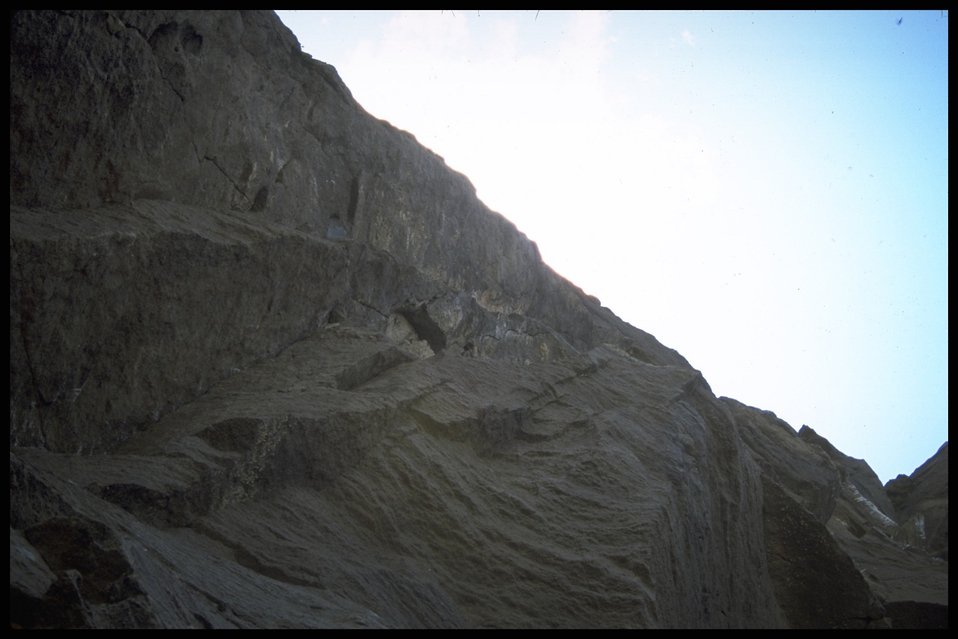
Scenic view, Ft. Rock, Lakeview District.